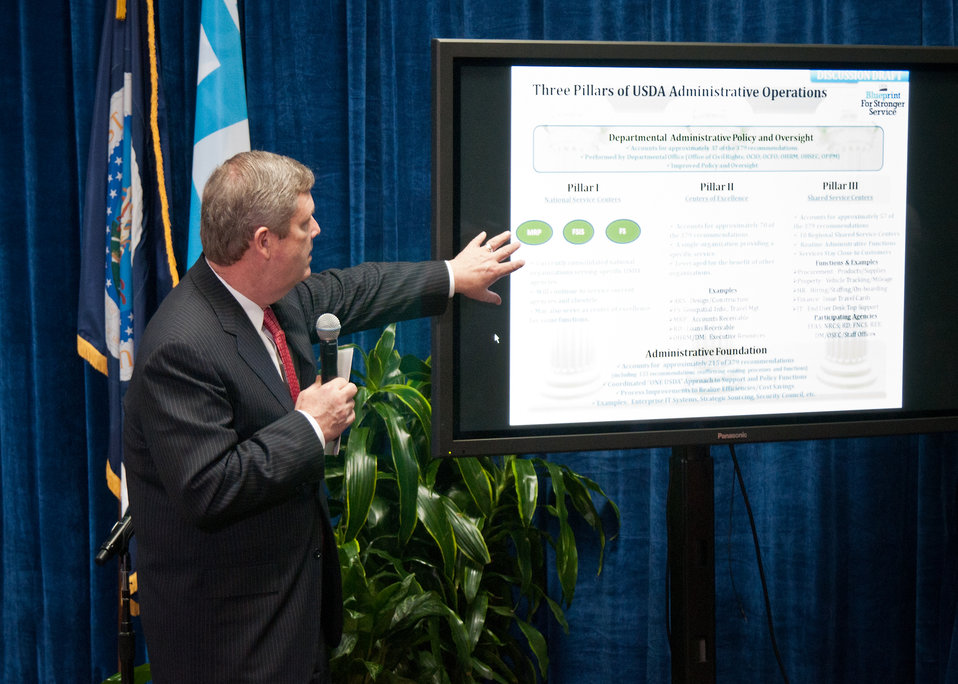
Agriculture Secretary Tom Vilsack explains the Three Pillars of the U. S. Department of Agriculture (USDA) Administrative Operations: National Service Centers, Centers of Excellence and Shared Service Centers during the Ask The Secretary event held in the South Building Cafeteria, in Washington, D.C., on Wednesday, March 21, 2012, gave the opportunity for USDA employees the ask questions about the Blueprint for Stronger Service Initiative and hear directly from Secretary Vilsack. This forum encouraged USDA employees to offer their ideas, voice their concerns, and gather more information on the discussions that are taking place within the USDA Administrative Solutions Project. The Blueprint for Stronger Service Initiative aims to build a modern and efficient service organization that is closely timed with technological innovations - and better suited to respond to 21st century agricultural challenges.